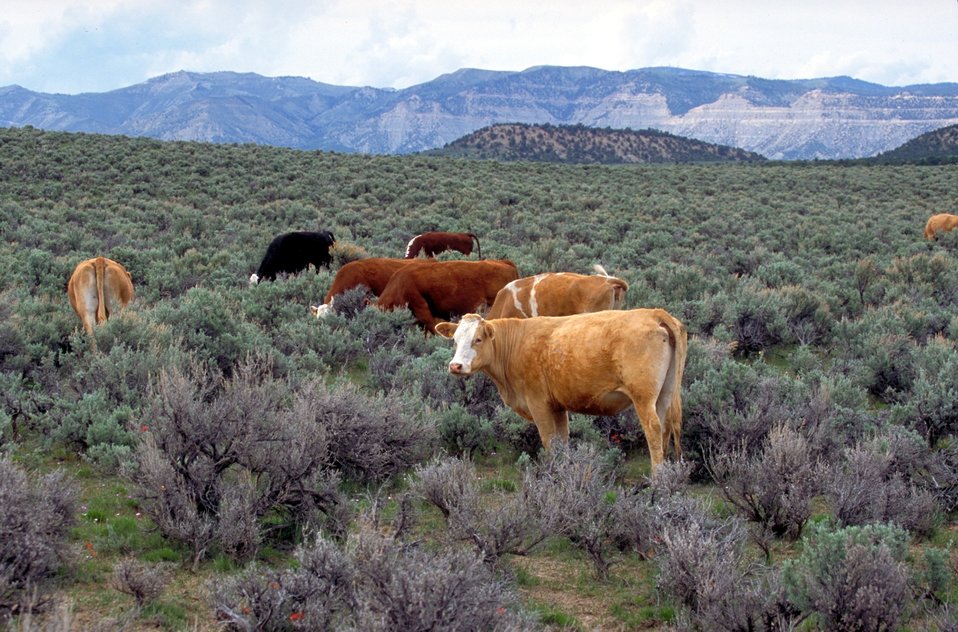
Livestock grazing on BLM lands near Price, Utah.